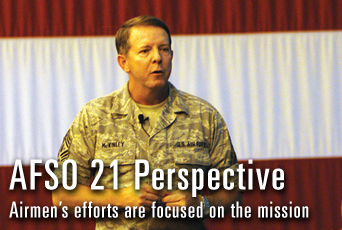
Chief McKinley offers AFSO 21 perspective